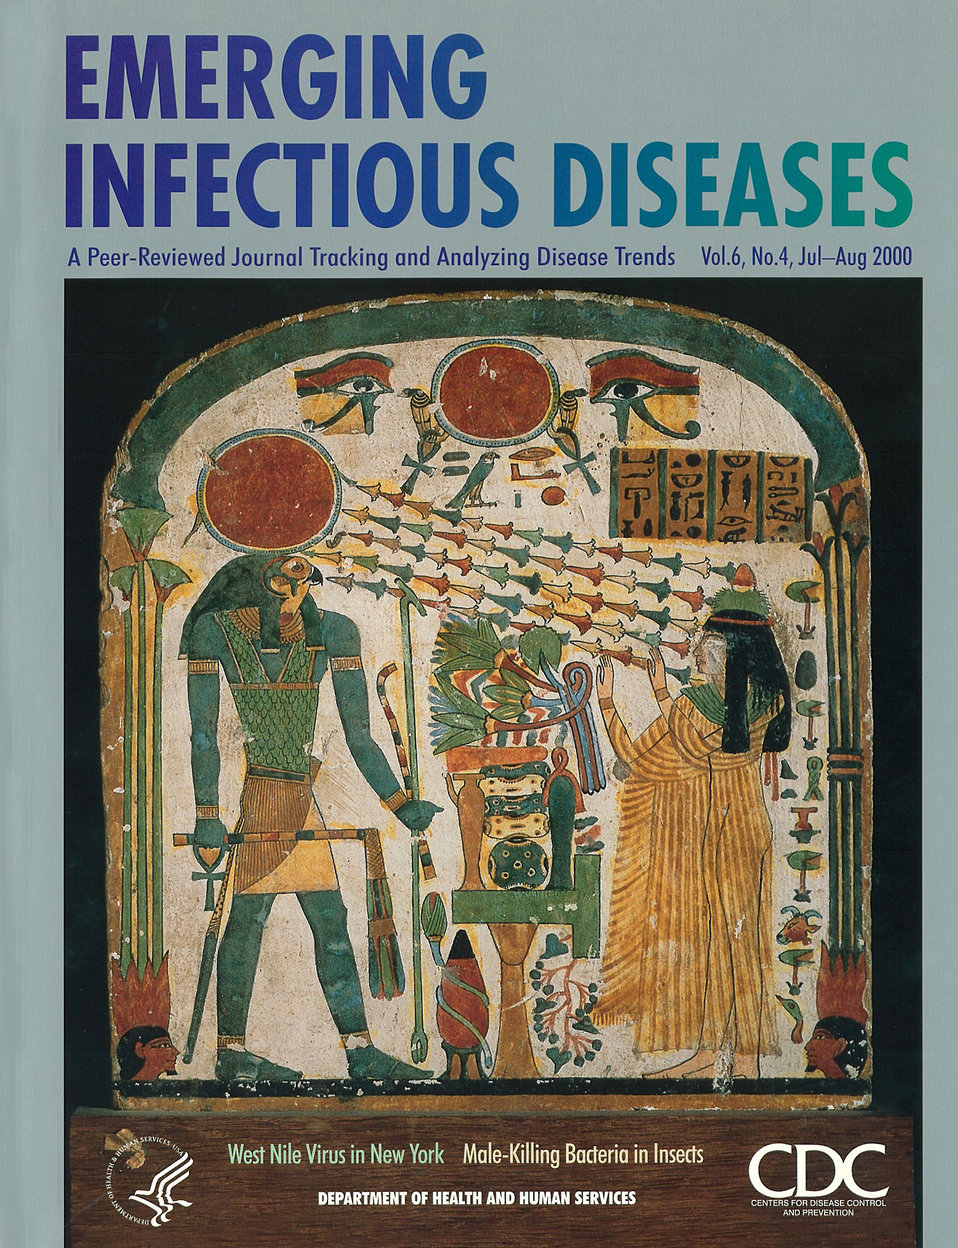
Emerging Infectious Diseases (EID) cover artwork for Volume 6, Number 4, July-August 2000 issue.